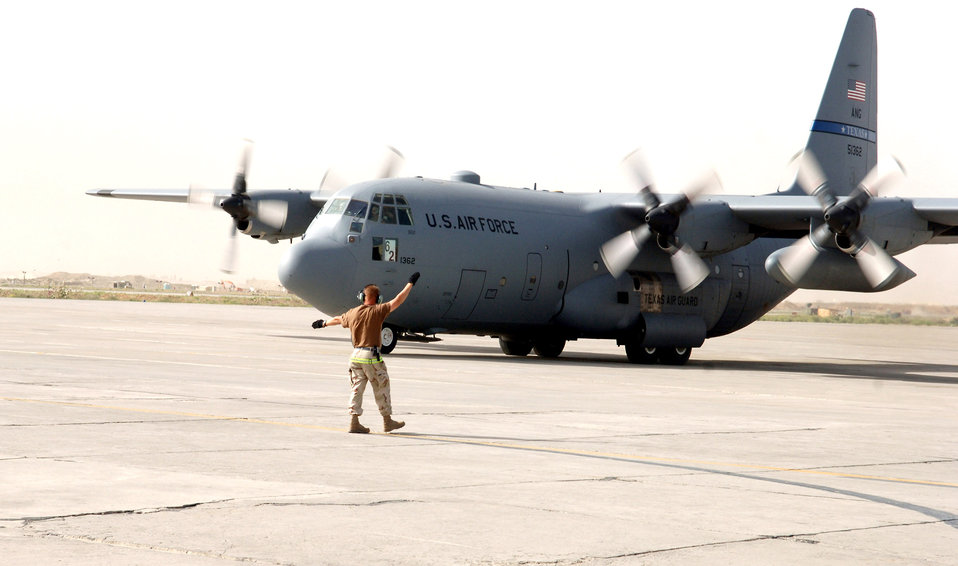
CENTAF releases airpower summary for Jan. 29

C-130 Hercules aircraft, like this one sitting on the flightline at Bagram Air Base, Afghanistan, provide intra-theater airlift support, helping to sustain operations throughout Afghanistan, Iraq and the Horn of Africa.